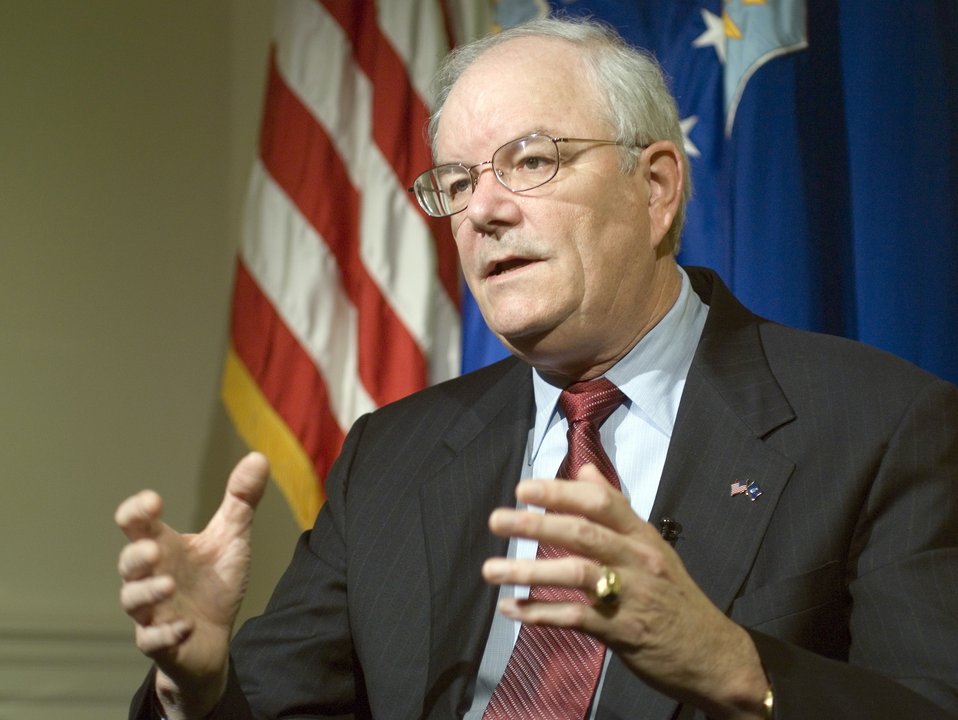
SECAF interview

WASHINGTON (AFPN) -- Secretary of the Air Force Michael W. Wynne talks about the pride in service and inspiration he saw in Airmen he met during his December trip to Southwest Asia.